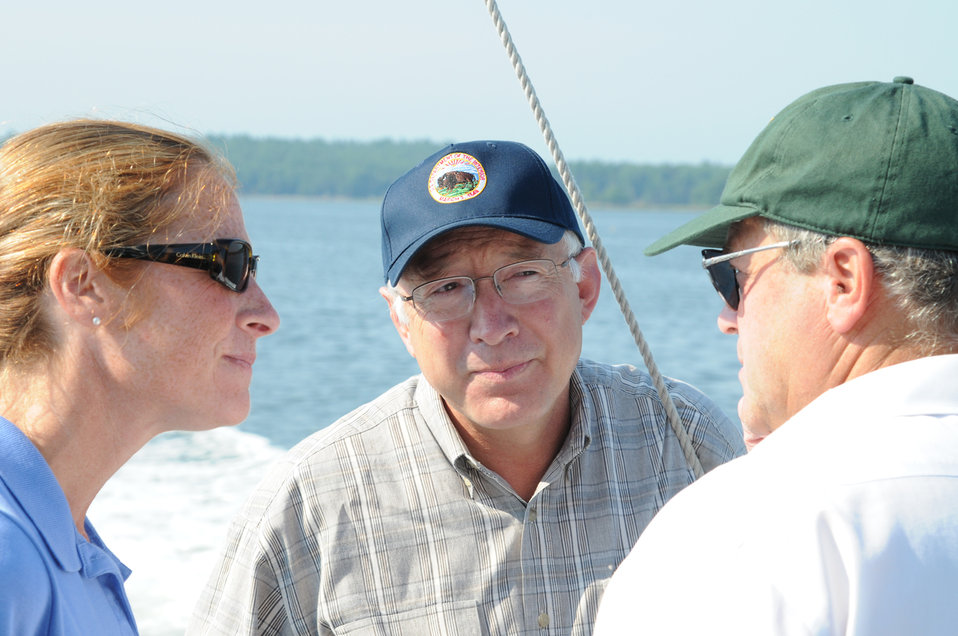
Secretary Salazar visit to Great Bay

Secretary Salazar during a boat tour of Great Bay with Glenn Normandeau, Executive Director of the New Hampshire Fish and Game Department and Wendi Weber, Acting Regional Director, Northeast Region, U.S. Fish and Wildlife Service. Friday, August 19th, 2011.Credit: Tami Heilemann/Department of the Interior